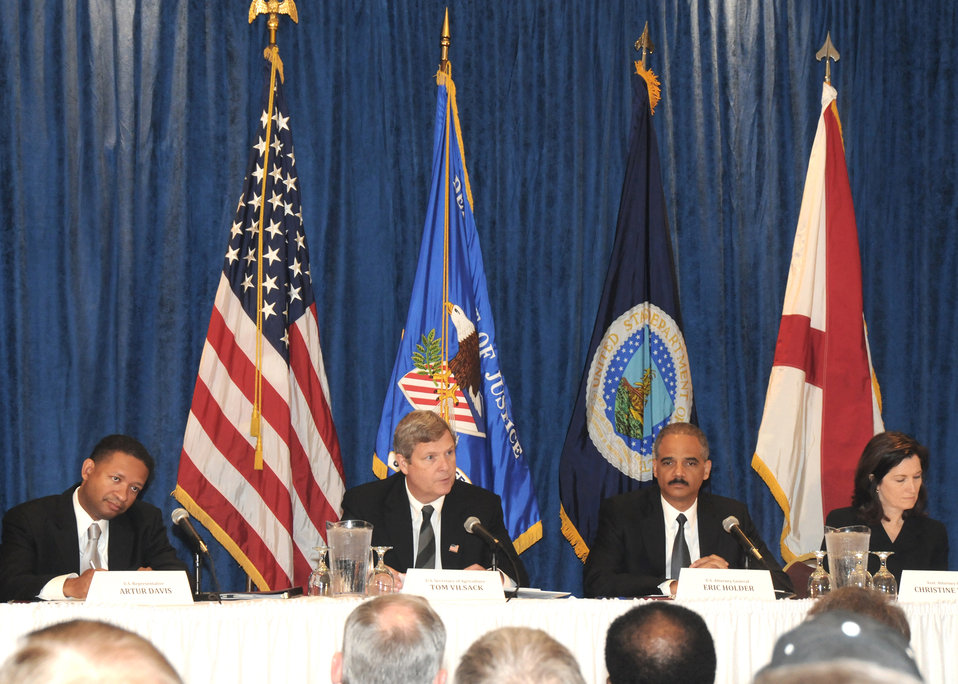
U. S. Department of Justice and the U.S. Department of Agriculture hold a listening session on “Agriculture and Antitrust Enforcement Issues in Our 21st Century Economy “ with poultry farmers at Alabama A & M University in Normal, AL, on Friday, May 21, 2010. The late morning listening was held with Congressman Artur Davis, Agriculture Secretary Tom Vilsack, Attorney General Eric Holder, and Assistant Attorney General for Antitrust Christine Varney,) USDA photo 10di1361-181.